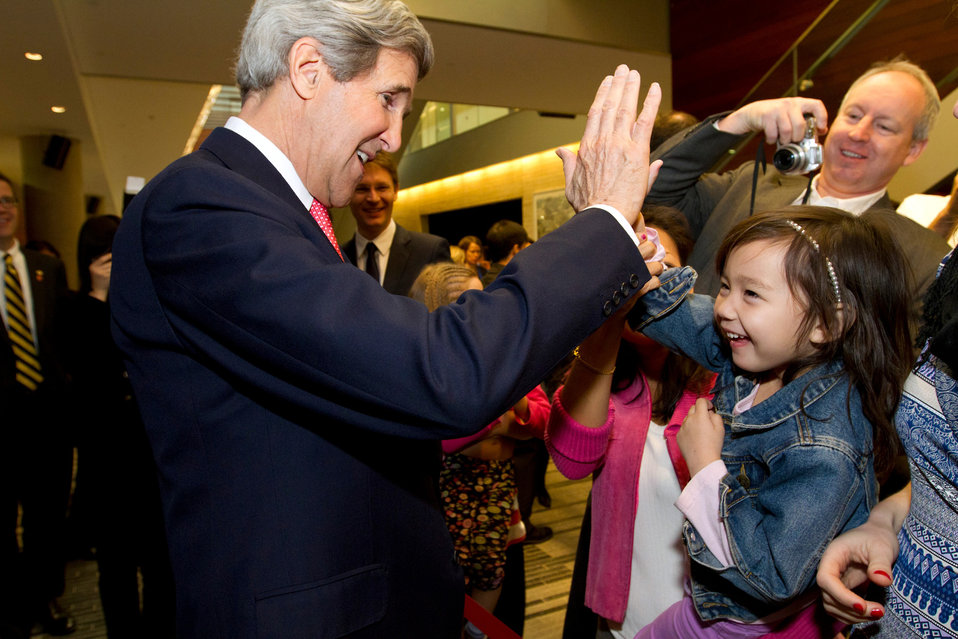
Secretary Kerry High Fives a Young Girl

U.S. Secretary of State John Kerry high fives a young girl at the Embassy Meet and Greet in Beijing, China, on April 14, 2013.